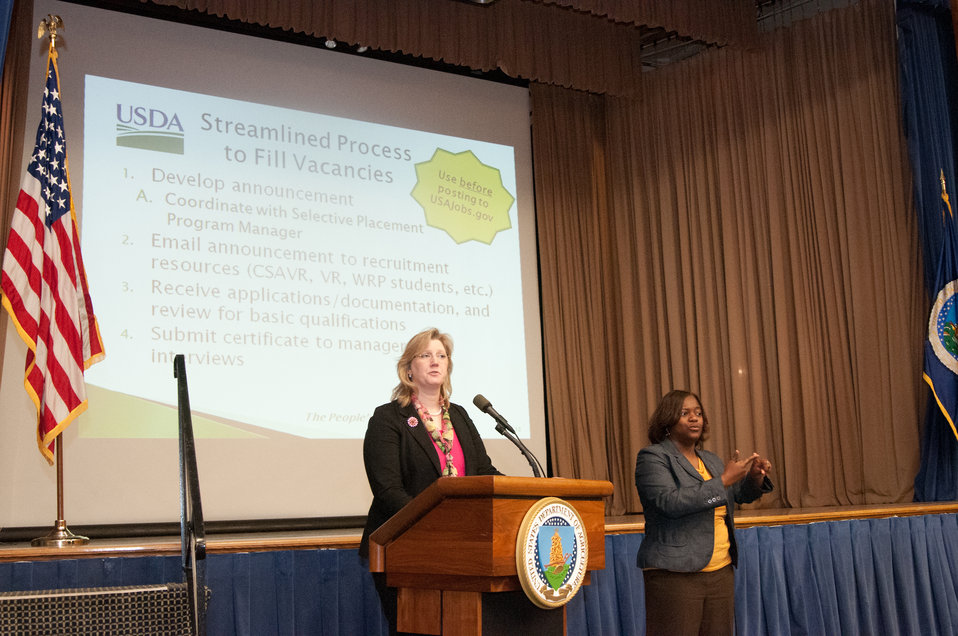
U.S. Department of Agriculture (USDA) Office of Human Resources Management (OHRM) Disability Employment Program Manager Alison Levy discusses recruitment and hiring of people with disabilities: policies, procedures and best practices at USDA’s OHRM Disability Employment Program Team Training at USDA in Washington, D.C. on Tuesday, May 14, 2013. Rebecca Phillips interprets for hearing-impaired employees during the event.